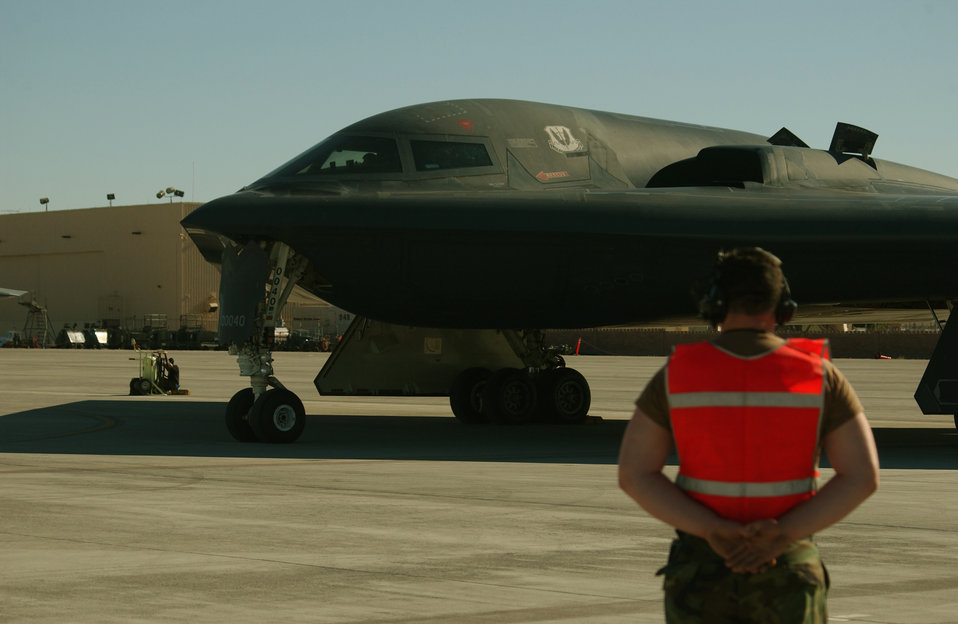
Red Flag 04-01

NELLIS AIR FORCE BASE, Nev.-- Airman 1st Class Joshua Anderson waits to signal a B-2 Spirit pilot to taxi the aircraft on the ramp here Oct. 23. Anderson is a crew chief from the 509th Aircraft Maintenance Squadron at Whiteman Air Force Base, Mo. He is responsible for keeping the bomber mission ready by ensuring that all required maintenance is completed. He and several other airmen from Whiteman are here for a Red Flag exercise.